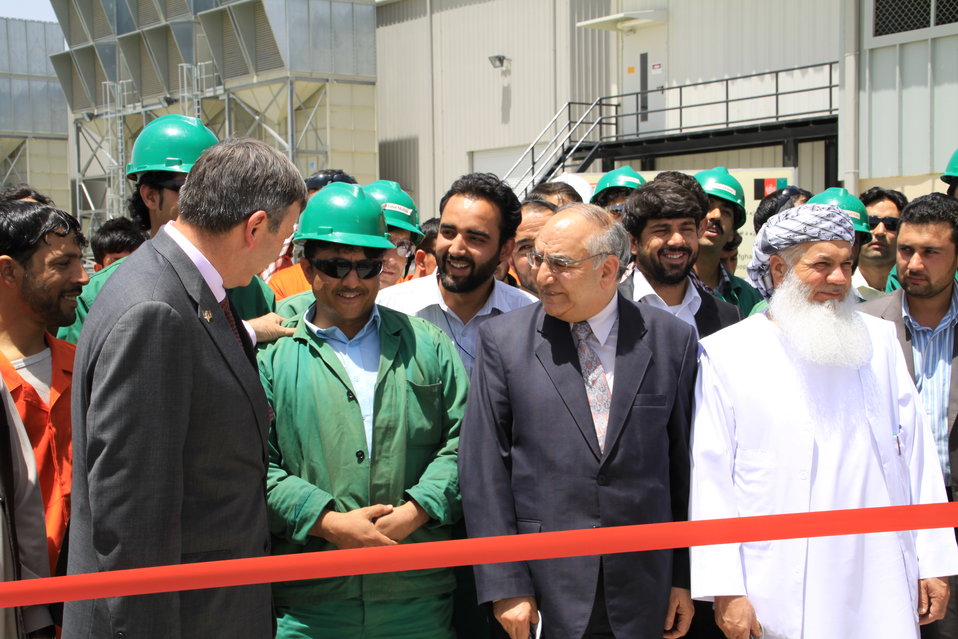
105 MW Tarakhil Power Plant Handover